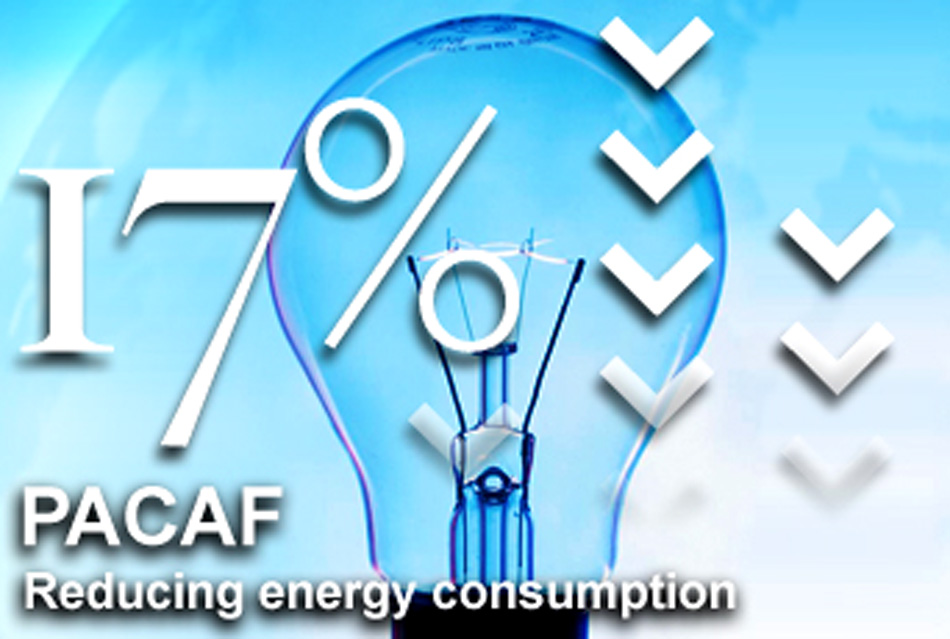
PACAF leads major commands in energy conservation

Pacific Air Forces officials have seen a 17 percent reduction in energy use from fiscal 2003.